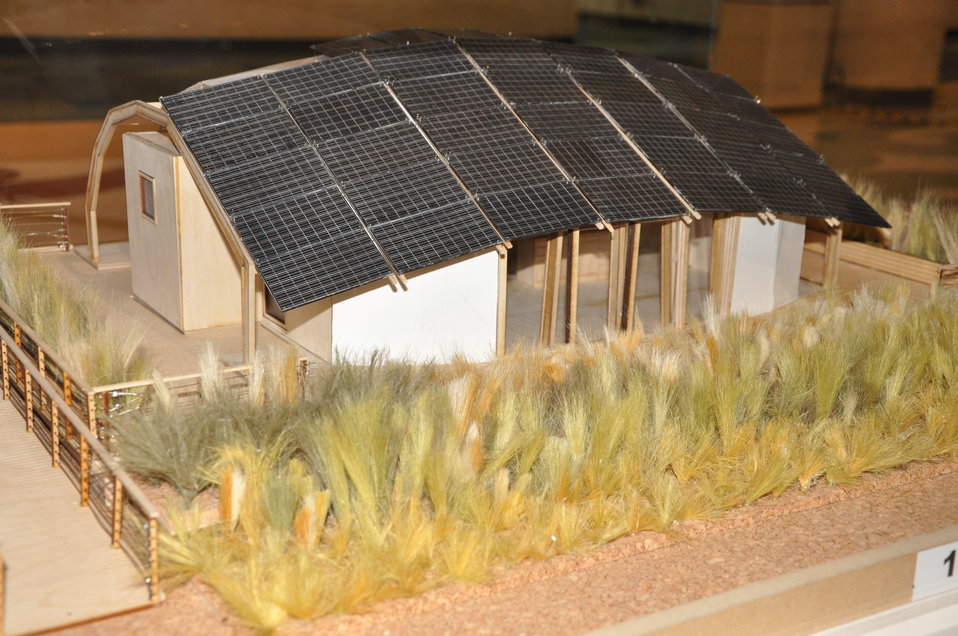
Team Canada